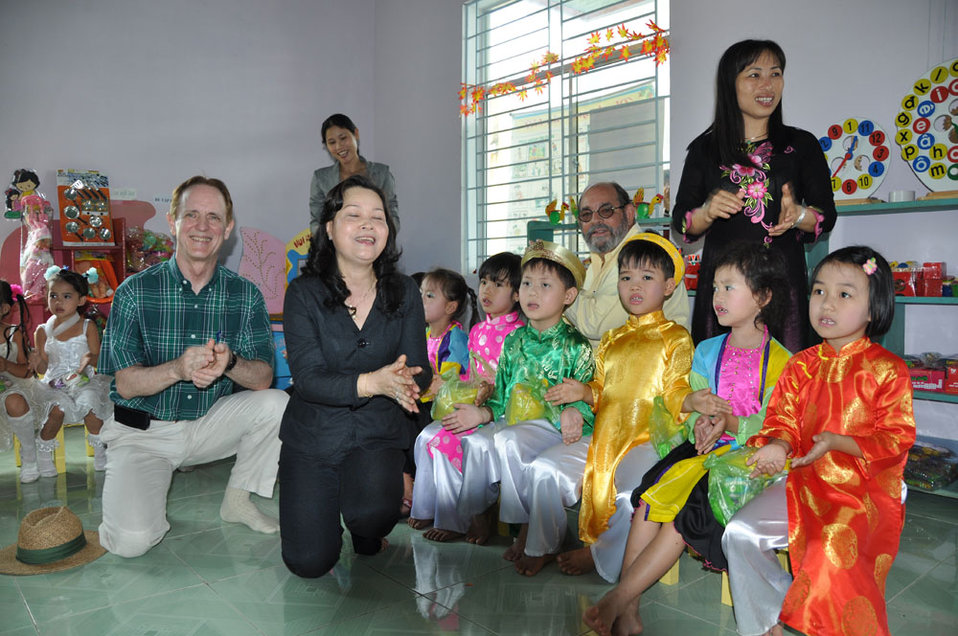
Children in Kon Tum, Vietnam, enjoy their new pre-schools refurbished with USAID funding